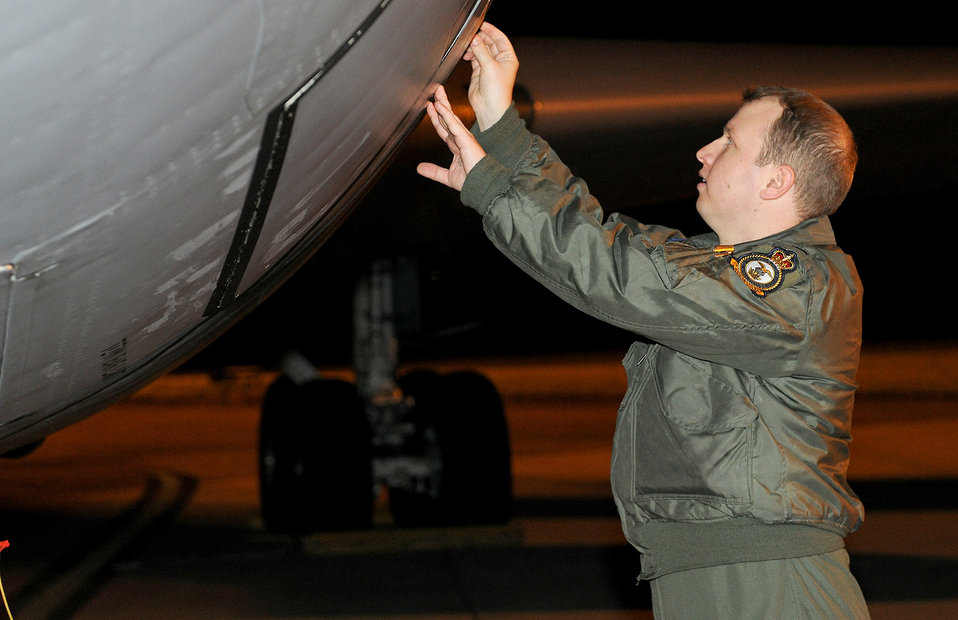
Joint Task Force Odyssey Dawn

110319-F-DE018-028 -- RAF MILDENHALL, England (March 19, 2011) -- First Lt. Stephen Ayers, 351st Air Refueling Squadron crew member, removes an inspection seal from a KC-135 Stratotanker before boarding for a refueling mission in support of Joint Task Force Odyssey Dawn. JTF Odyssey Dawn is the U.S. Africa Command task force established to provide operational and tactical command and control of U.S. military forces supporting the international response to the unrest in Libya and enforcement of United Nations Security Council Resolution (UNSCR) 1973. UNSCR 1973 authorizes